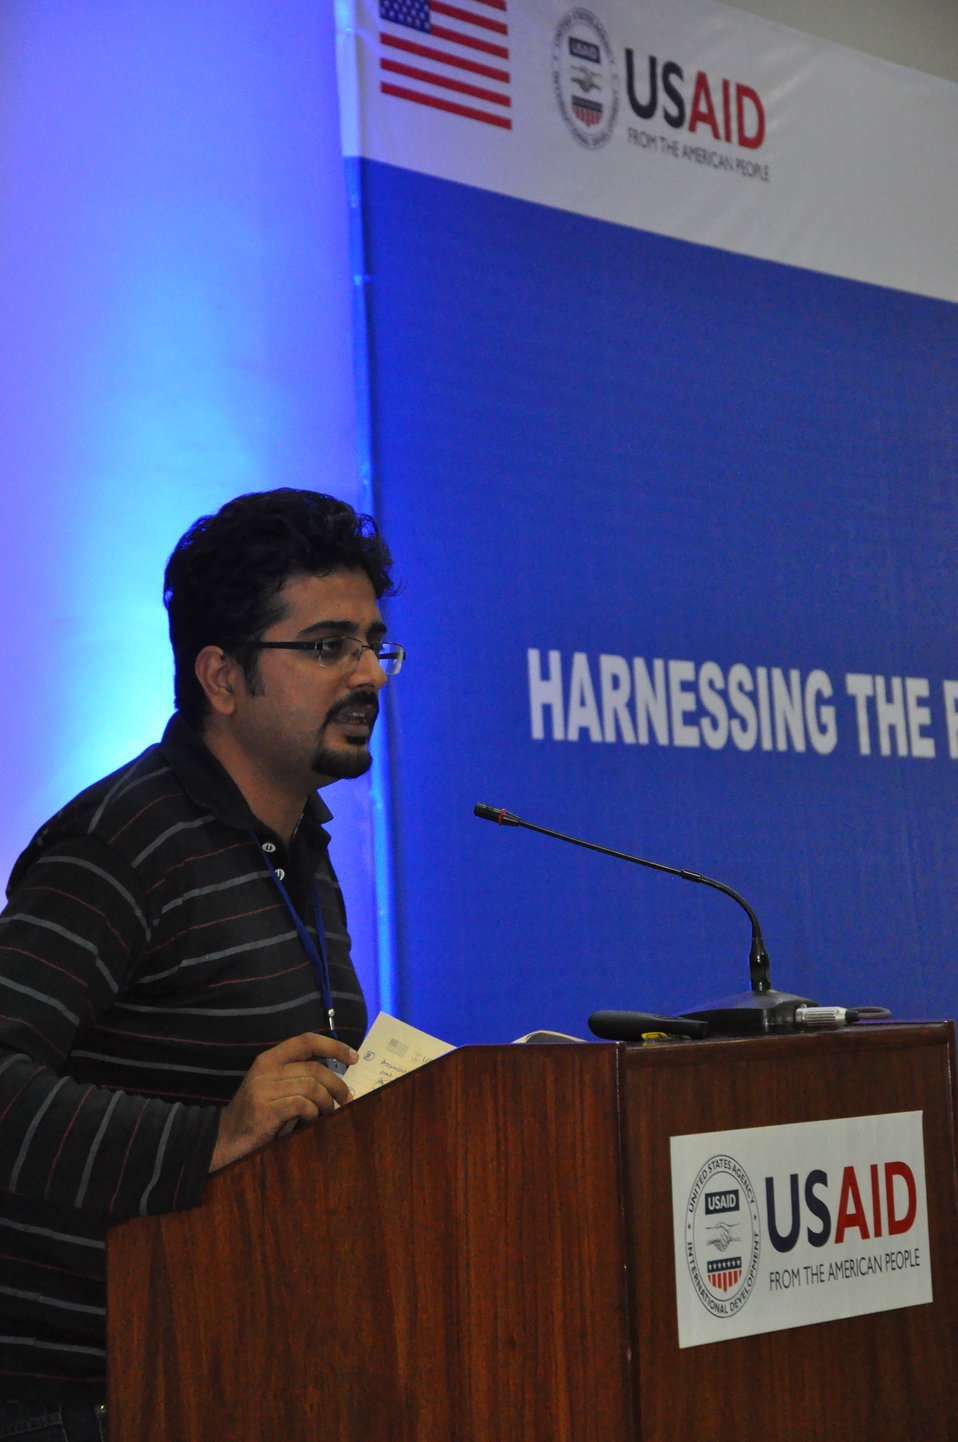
A participant representing his group following the breakout sessions